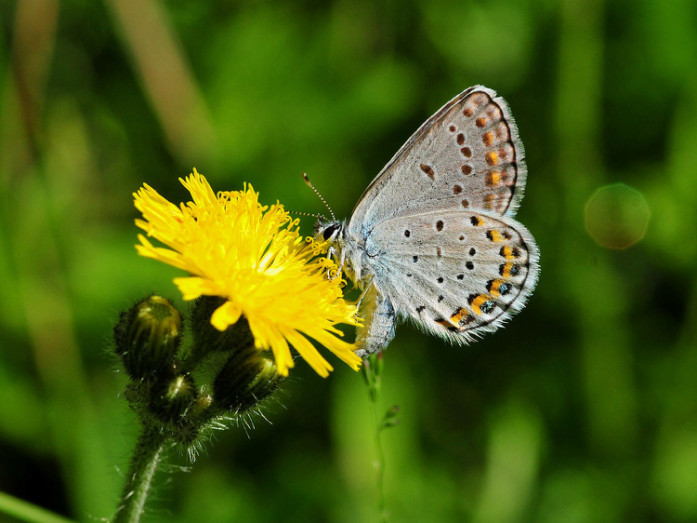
Karner Blue Butterfly

Credit: Joel Trick/USFWS

The Karner blue butterfly, an endangered species, is a small butterfly that lives in oak savannas and pine barren ecosystems from eastern Minnesota and eastward to the Atlantic seaboard.